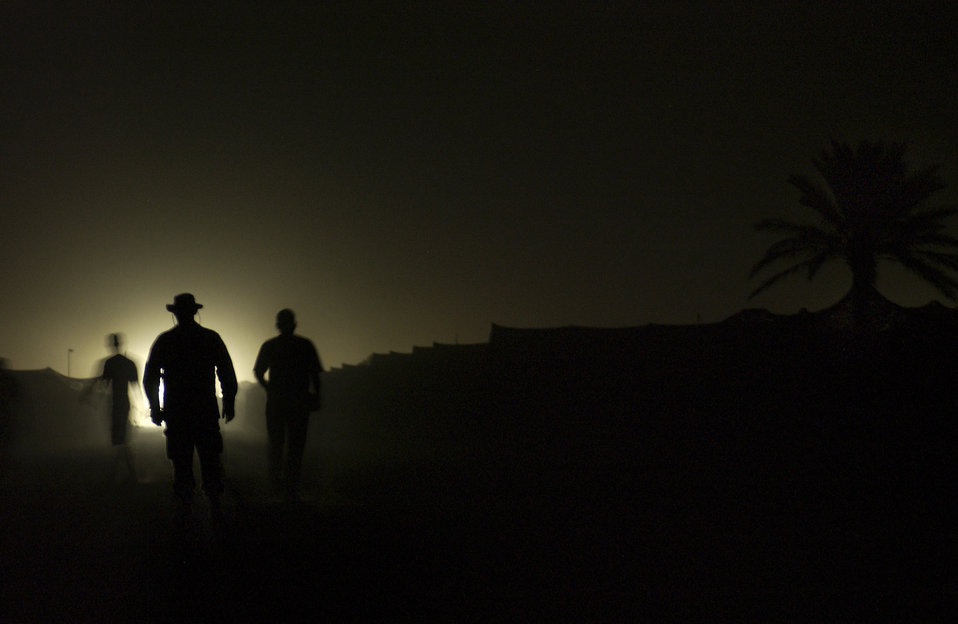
A walk on the dark side

CAMP SATHER, Iraq -- Airmen from the 447th Air Expeditionary Group here walk among tents during blackout conditions. After a bombing in nearby Baghdad, the camp located at Baghdad International Airport was bathed in darkness as a force protection measure.